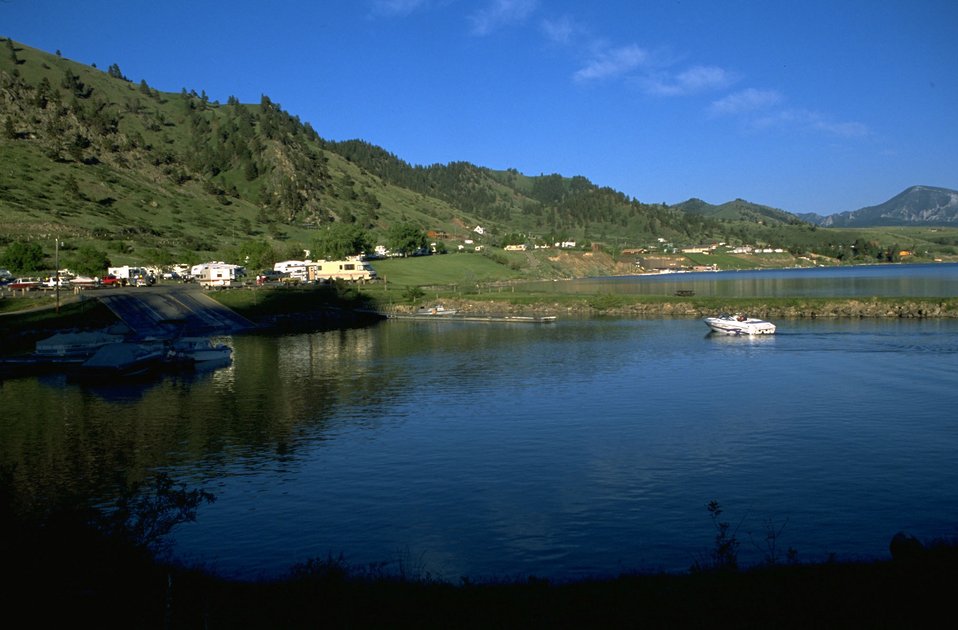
Holter Lake Campground and Marina